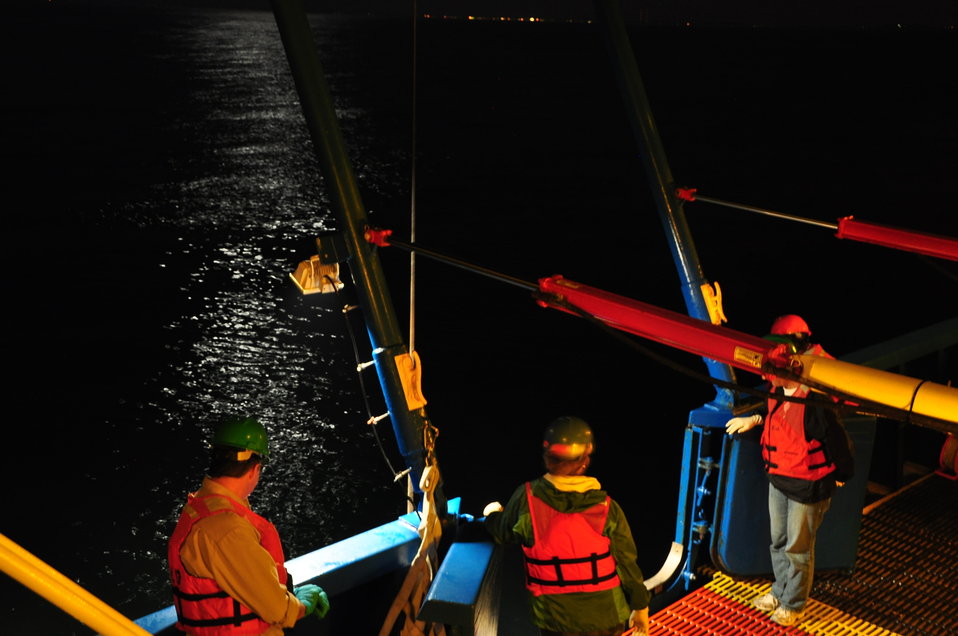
July 2009, Taking in the moonlight while the CTD sends back information from over 100' below!

During these quiet moments, I tried not to think about the giant eels in 'A Princess Bride' but the still darkness offshore didn't bring much else to mind, other than what an incredible experience this was. I hope I get to do it again someday.